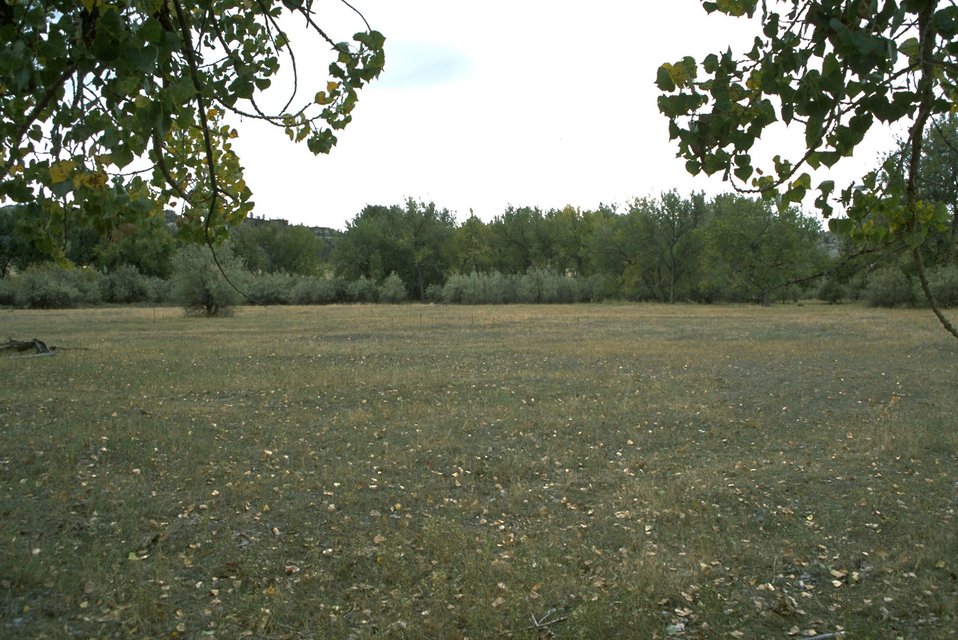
Grassy area surrounded by trees at Howrey Island Recreation Area